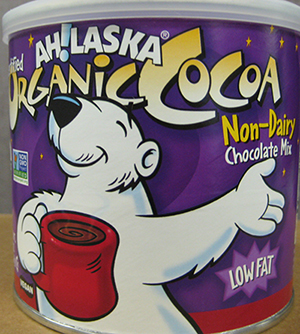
RECALLED – Chocolate mix

April 3, 2014 – Product Recall – Koru Pacific Packaging Announces a Voluntary Recall for One Lot # AH!LASKA® Organic Cocoa Non-Dairy Chocolate Mix, 12 oz. Canister Due to Possible Milk Allergen.